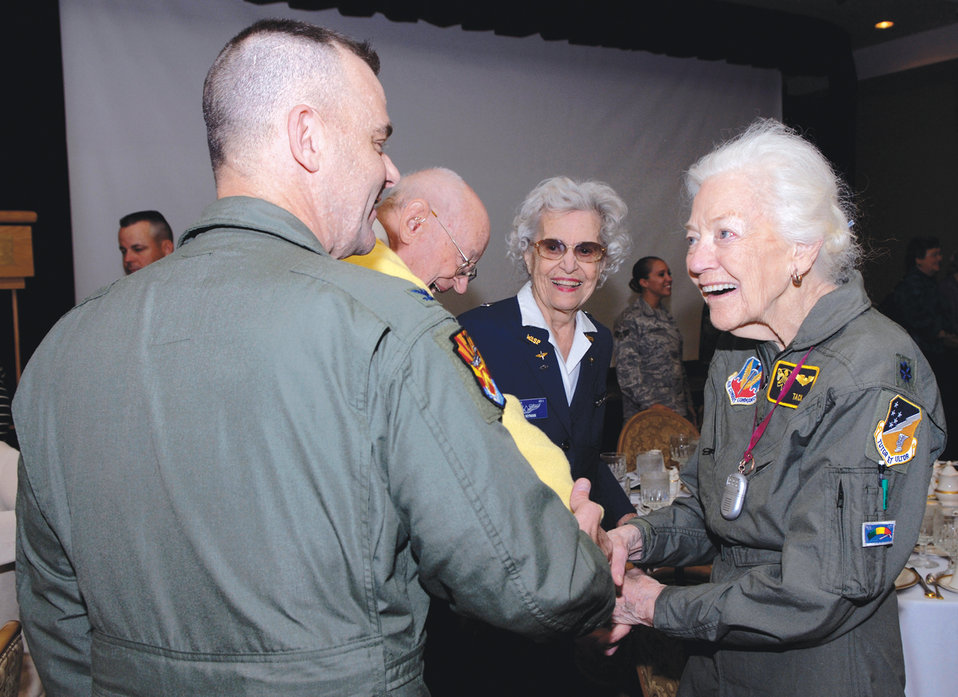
WASP celebrate Women's History Month

Col. Jeff Weed greets Betty Blake March 4, 2010, at Luke Air Force Base, Ariz., during the Women's History Month Observation Luncheon. Colonel Weed is the 56th Fighter Wing vice commander. Ms. Blake is a member of the Women Airforce Service Pilots.